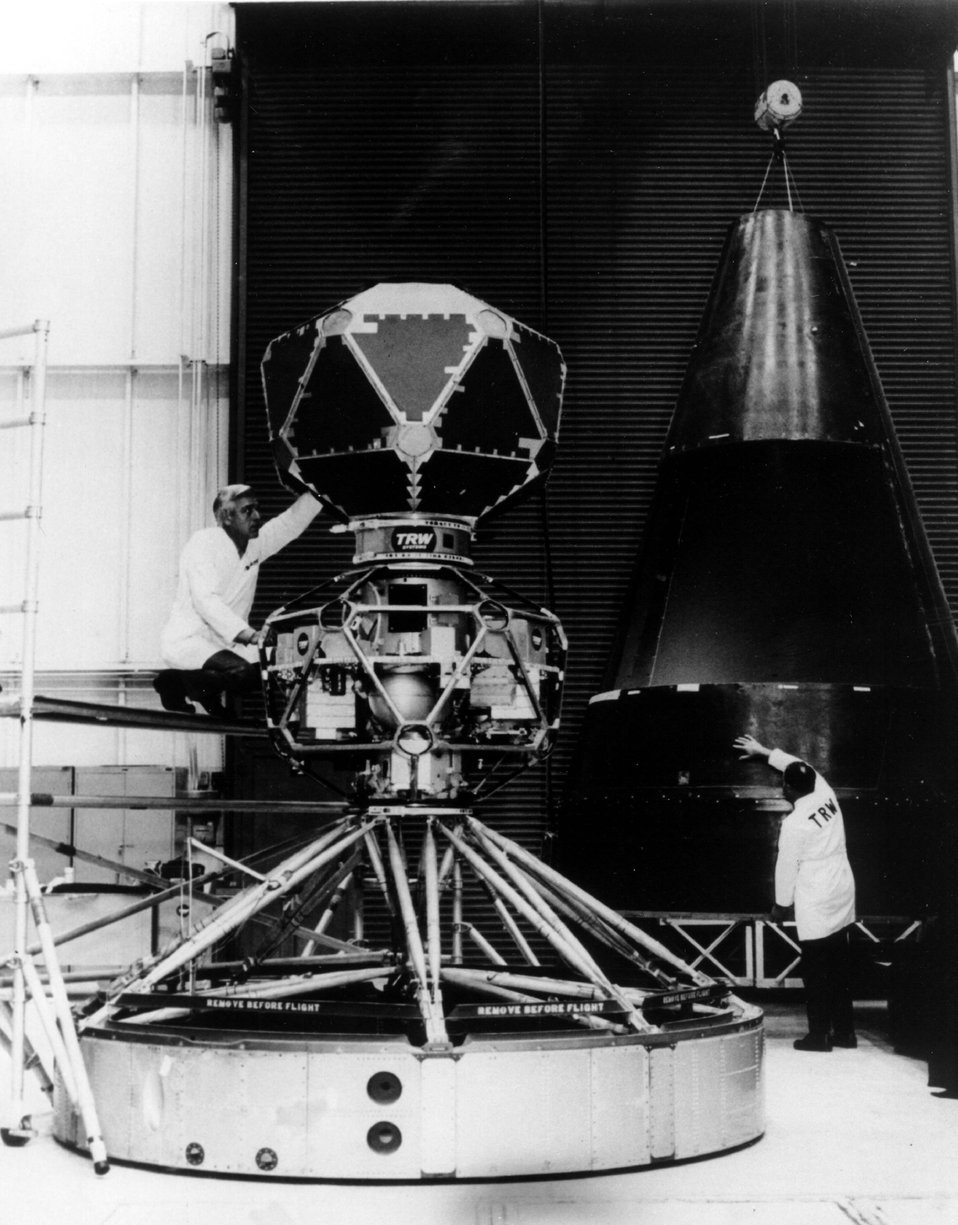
A new version of the Vela Nuclear Detection Satellite (NDS), designed and built by TRW Systems at Redondo Beach, California, is one of two scheduled to be launched in tandem early 1967. c. 1967